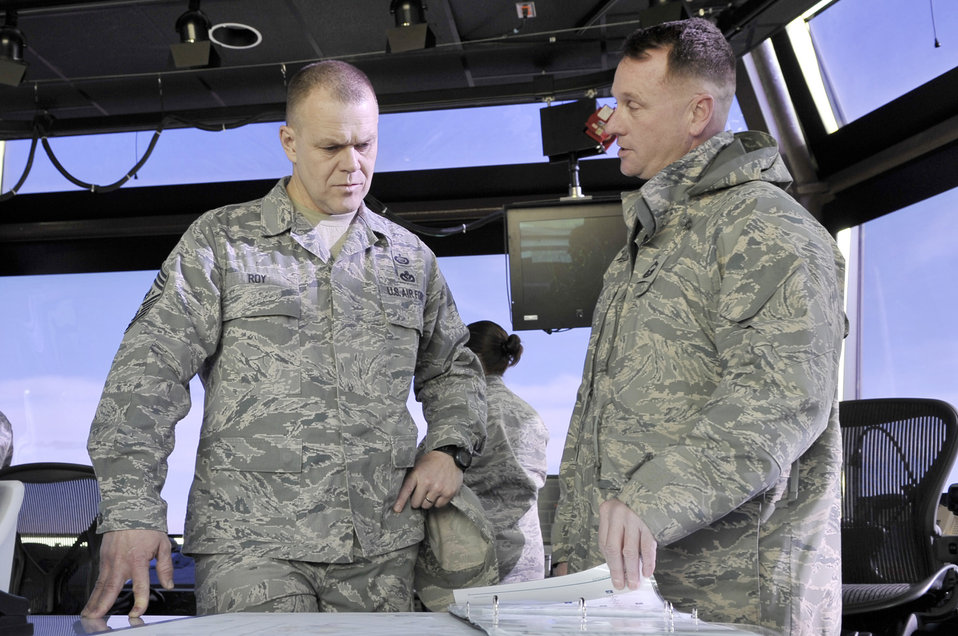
Top enlisted Airman addresses key Cannon issues during visit

Senior Master Sgt. Jeffrey Davis briefs Chief Master Sgt. of the Air Force James A. Roy Jan. 19, 2010, at Cannon Air Force Base, N.M. Sergeant Davis described the number of building projects planned and how they will affect the quality of life for Cannon AFB Airmen. Sergeant Davis is assigned to the 27th Special Operations Wing.